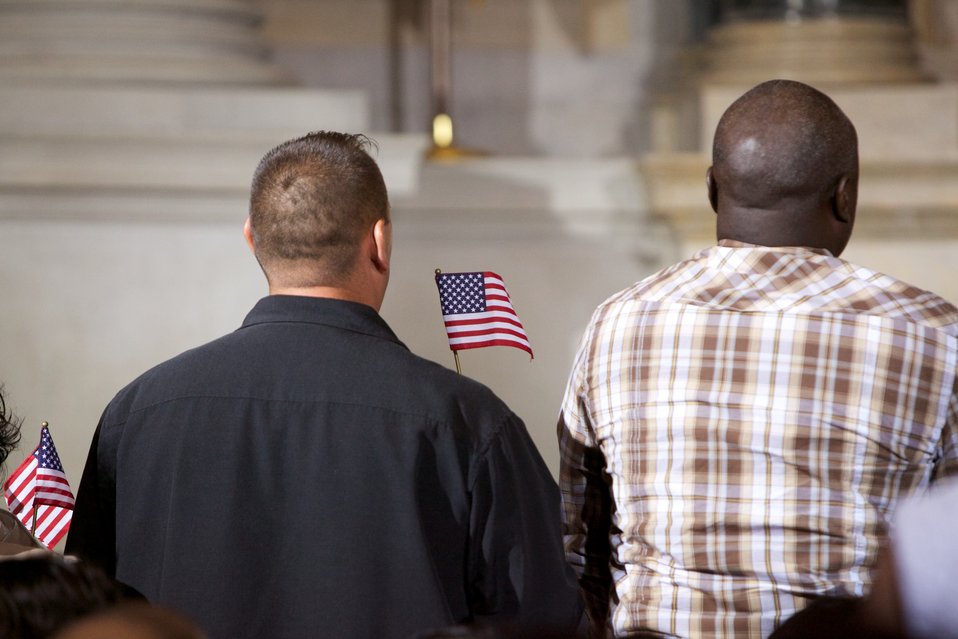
Naturalization Ceremony with Michelle Obama